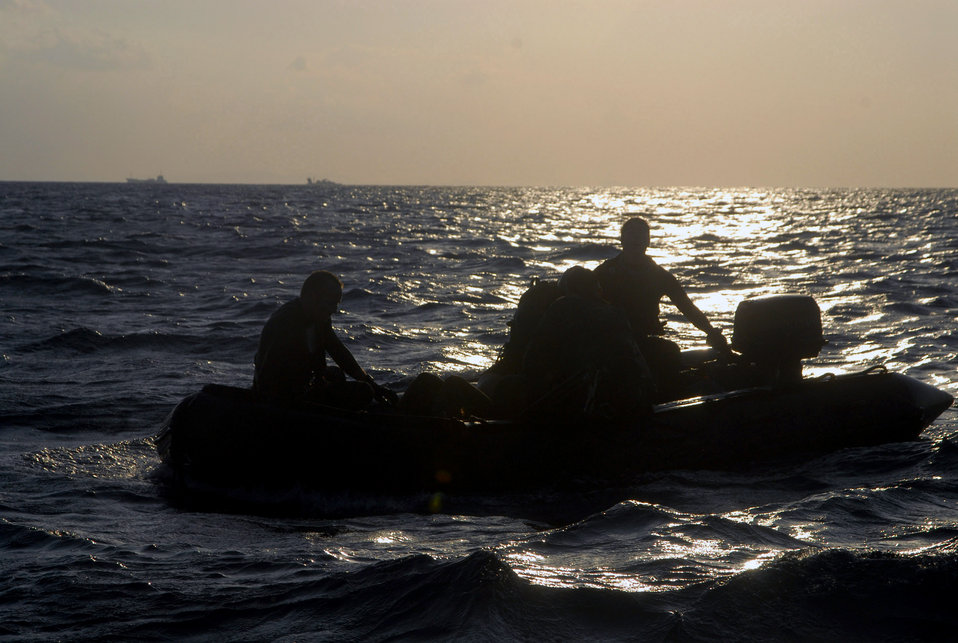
Airmen practice water rescue

Members of the 31st Rescue Squadron return Capt. Derek Flynn to Kadena Air Base, Japan, Oct. 24 after pulling him out of the waters off the coast of Okinawa. Captain Flynn was placed in the water as part of a survival, evasion, resistance and escape exercise held during operational readiness exercise Beverly High 08-1. Captain Flynn is with the 67th Fighter Squadron.